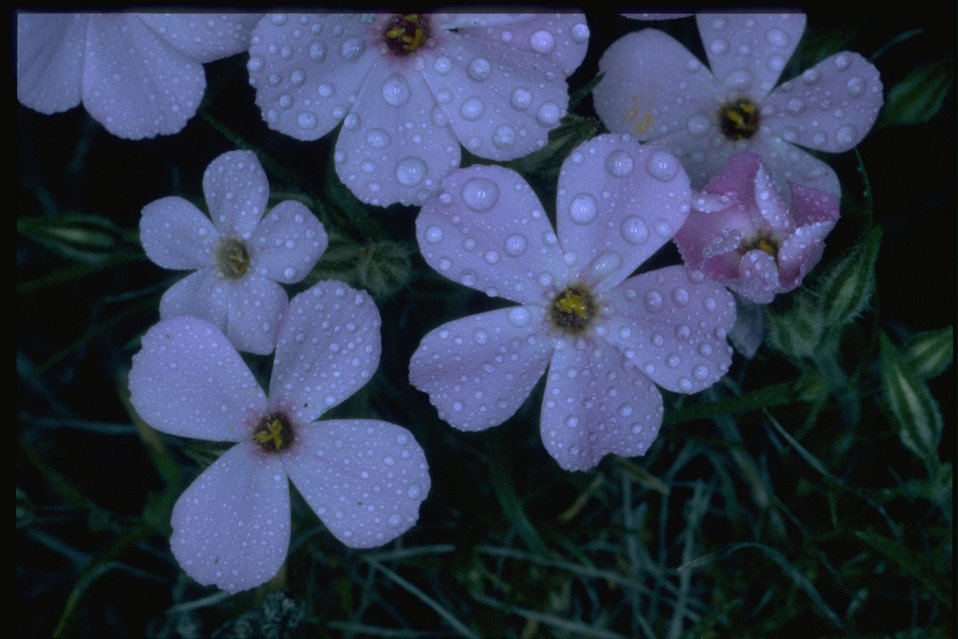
Medium shot of Phlox wildflowers.